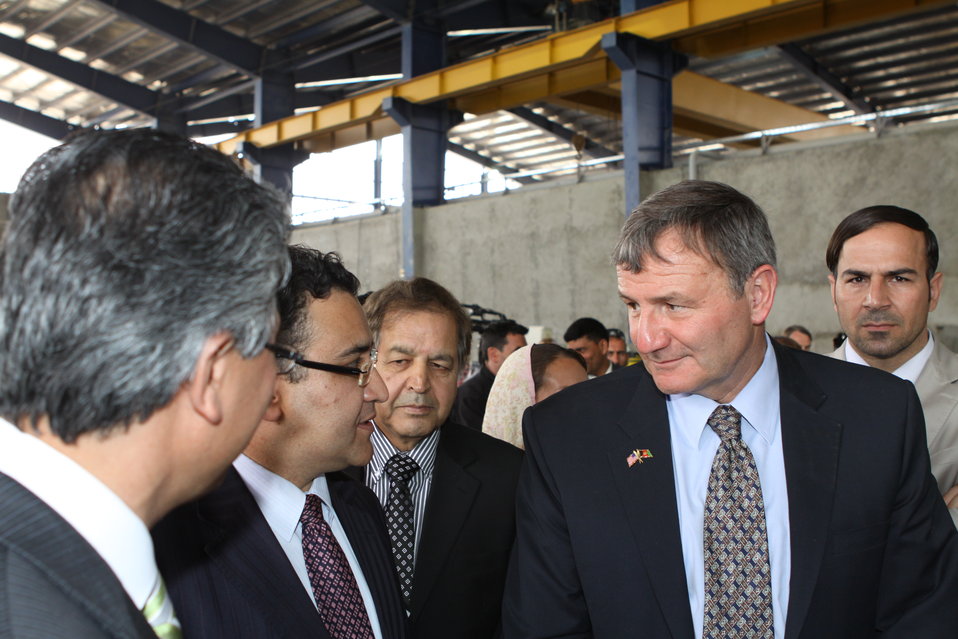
100525 Hirat Marble Conference 382